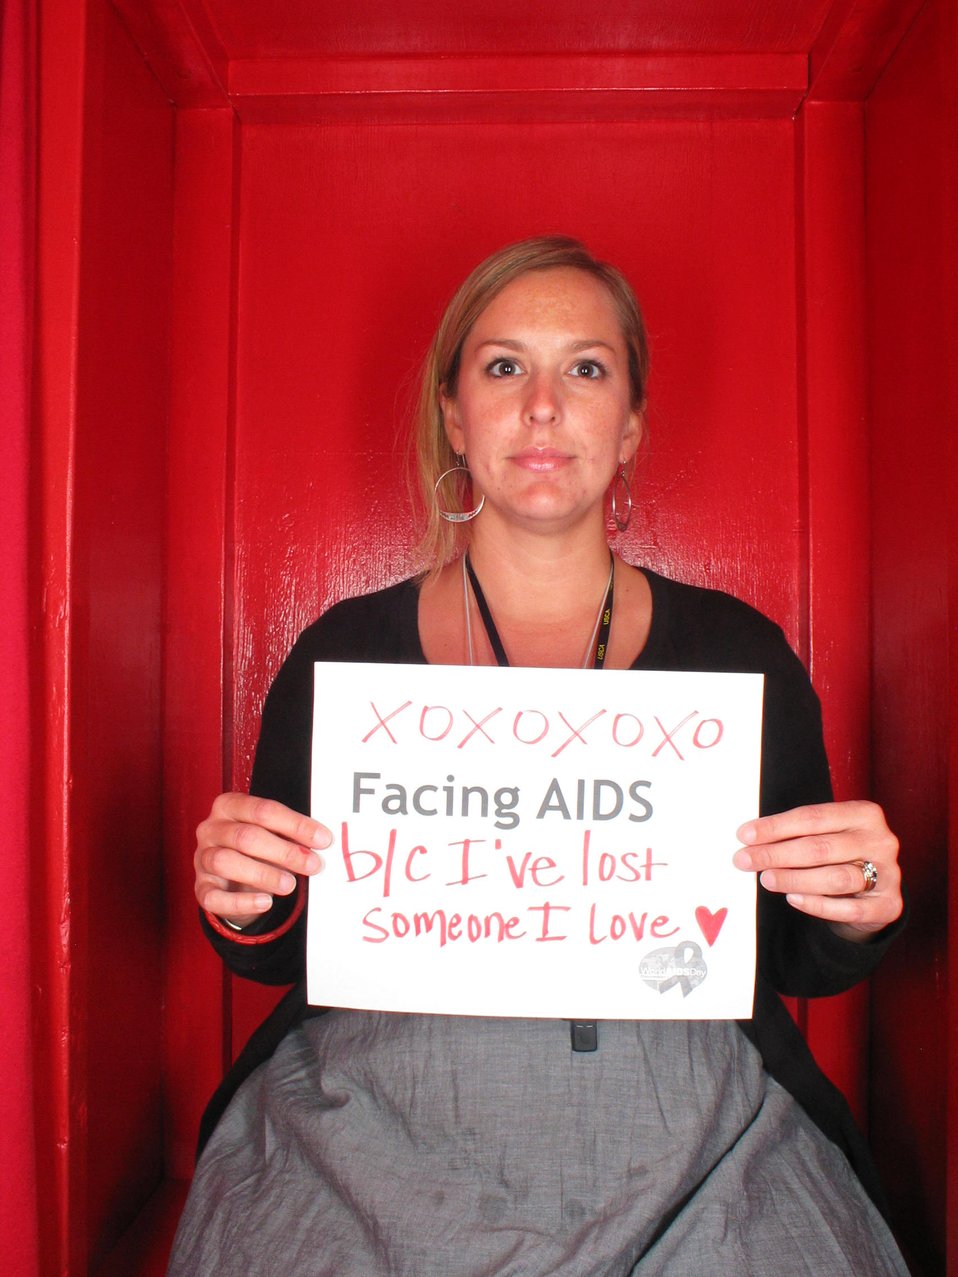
Facing AIDS because I lost somone I love XOXOX